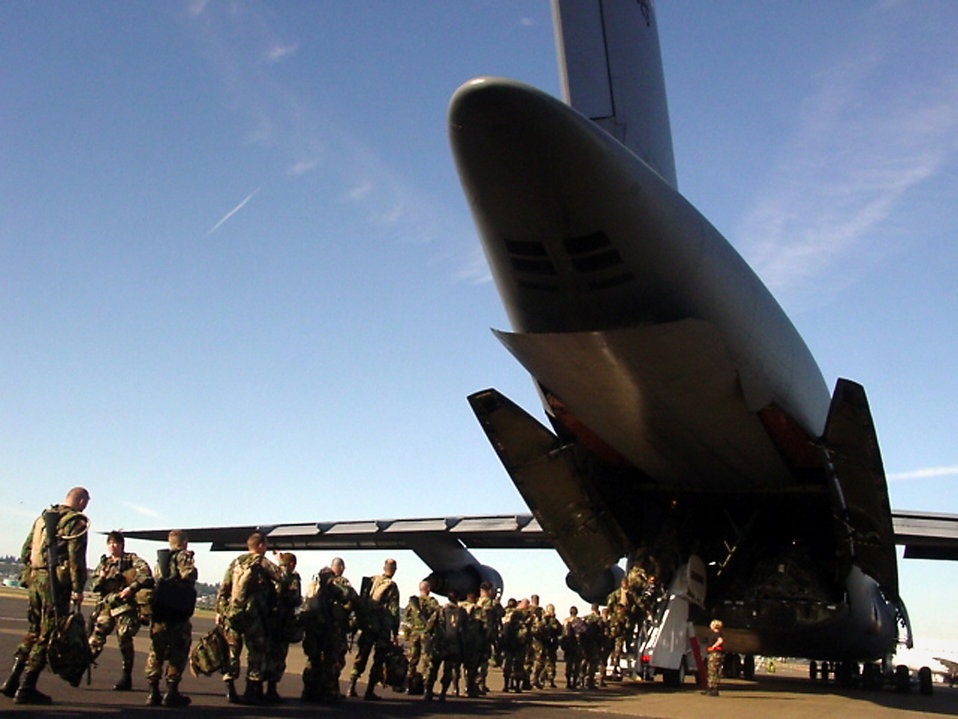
PORTLAND INTERNATIONAL AIRPORT, Ore. -- Oregon Army National Guard Soldiers board a KC-135 Stratotanker from the Illinois Air National Guard's 126th Air Refueling Wing. The aircraft will take the Soldiers to support hurricane-relief efforts in Louisiana. Air Force reservists with the 939th Air Refueling Wing here are providing around-the-clock support to airlift the Soldiers.